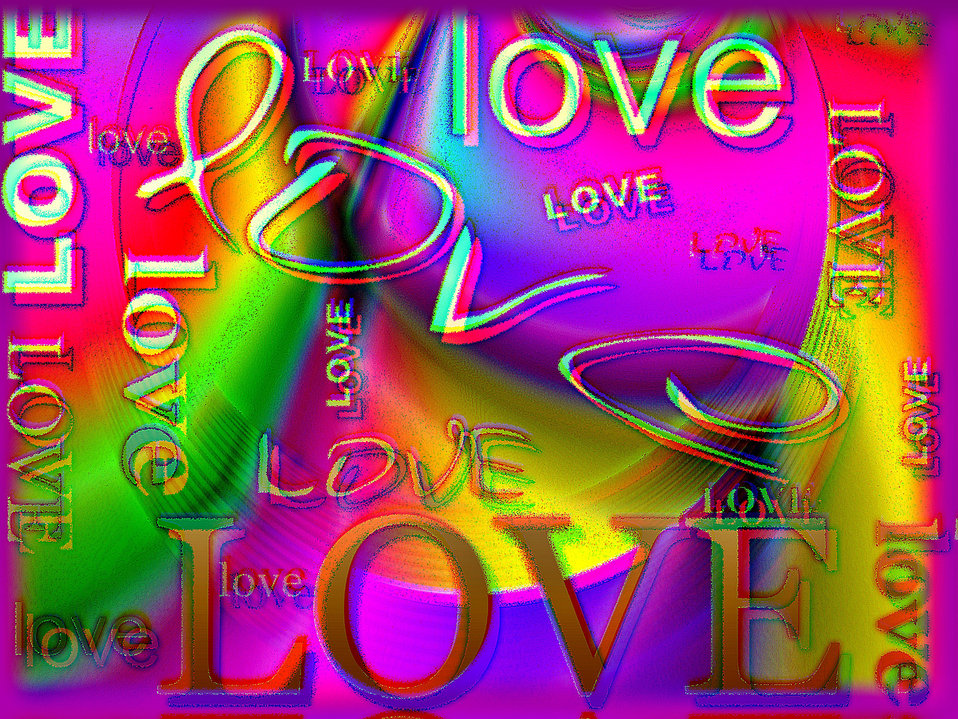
Background 400

Background.